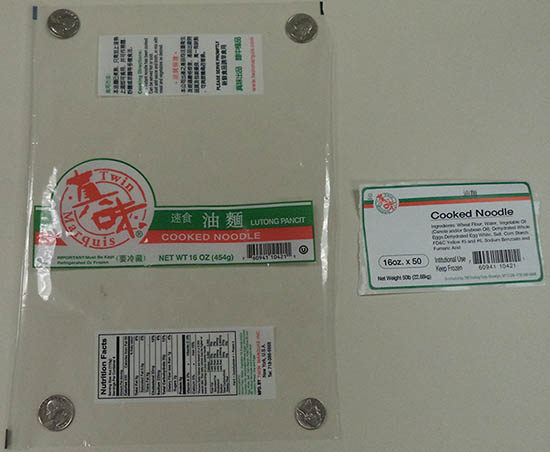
RECALLED – Cooked Noodle and Lo Mein Noodle

March 03, 2014 – Product Recall – Twin Marquis, Inc Issues Allergy Alert on Undeclared Milk in Specific Lots of its Cooked Noodle and Lo Mein Noodle.